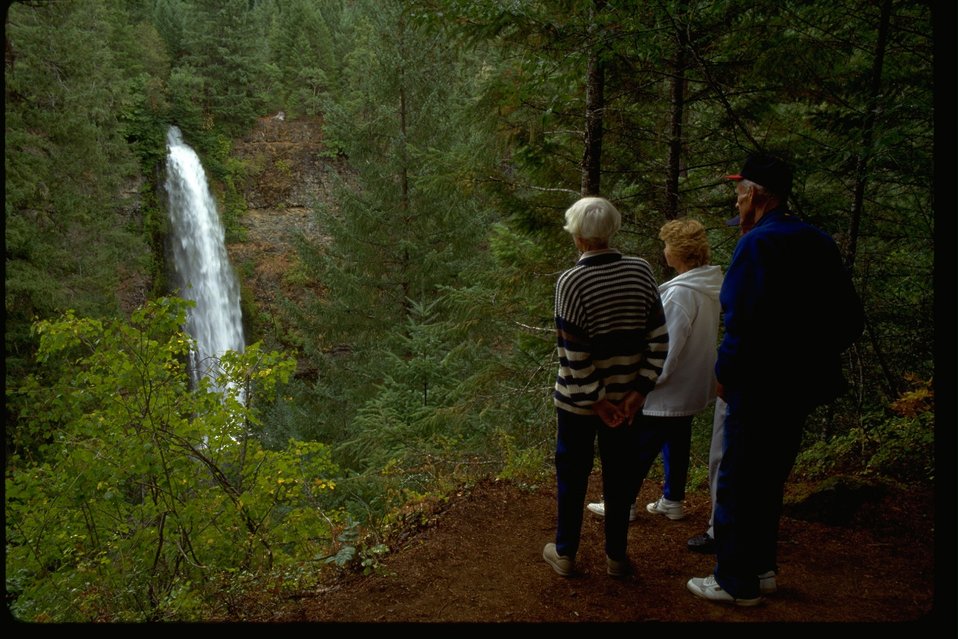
Onlookers take in the beauty of the Mill Creek Falls on the Upper Rogue.